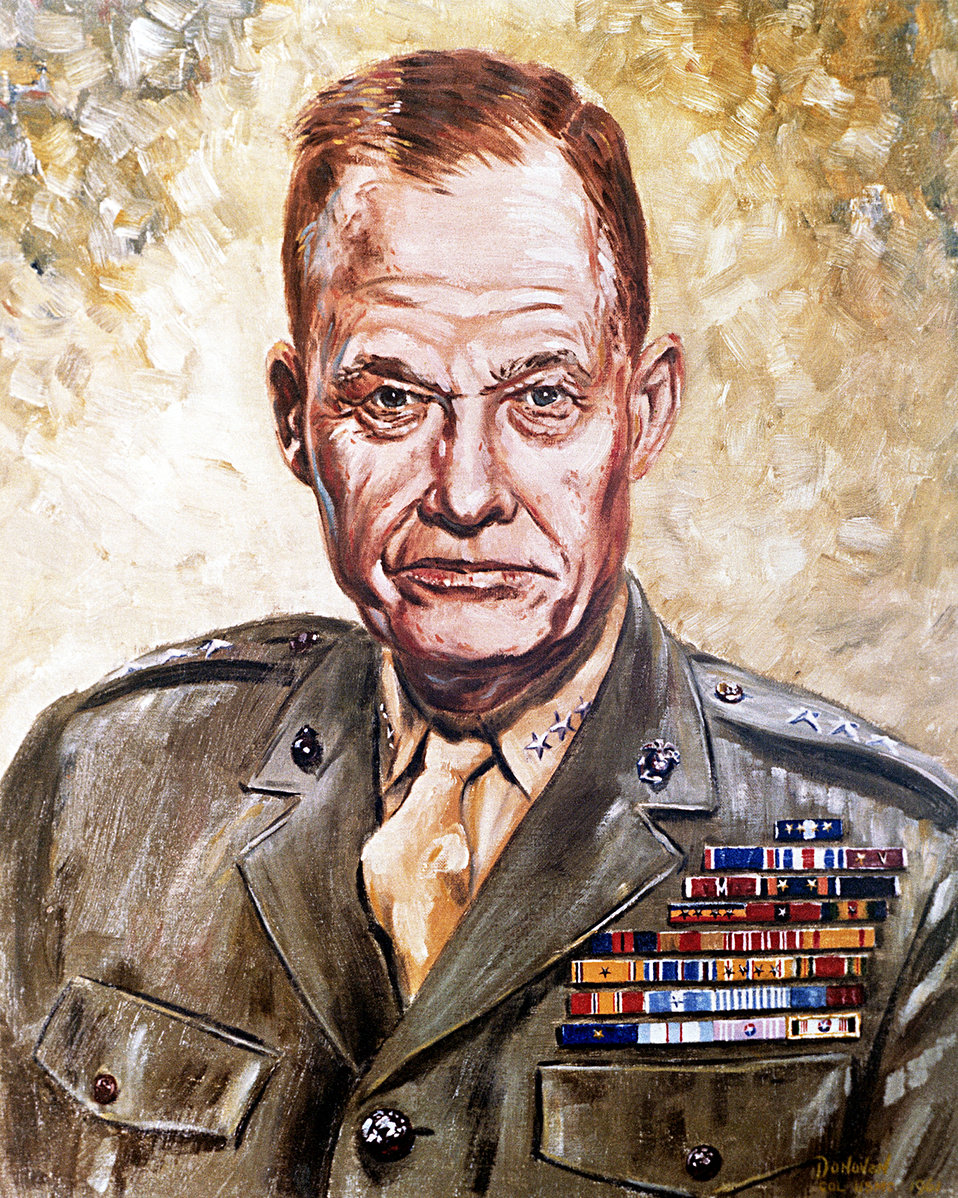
U.S. Heroes

Retired Lt. Gen. Lewis Puller is accounted as the most decorated Marine in history.